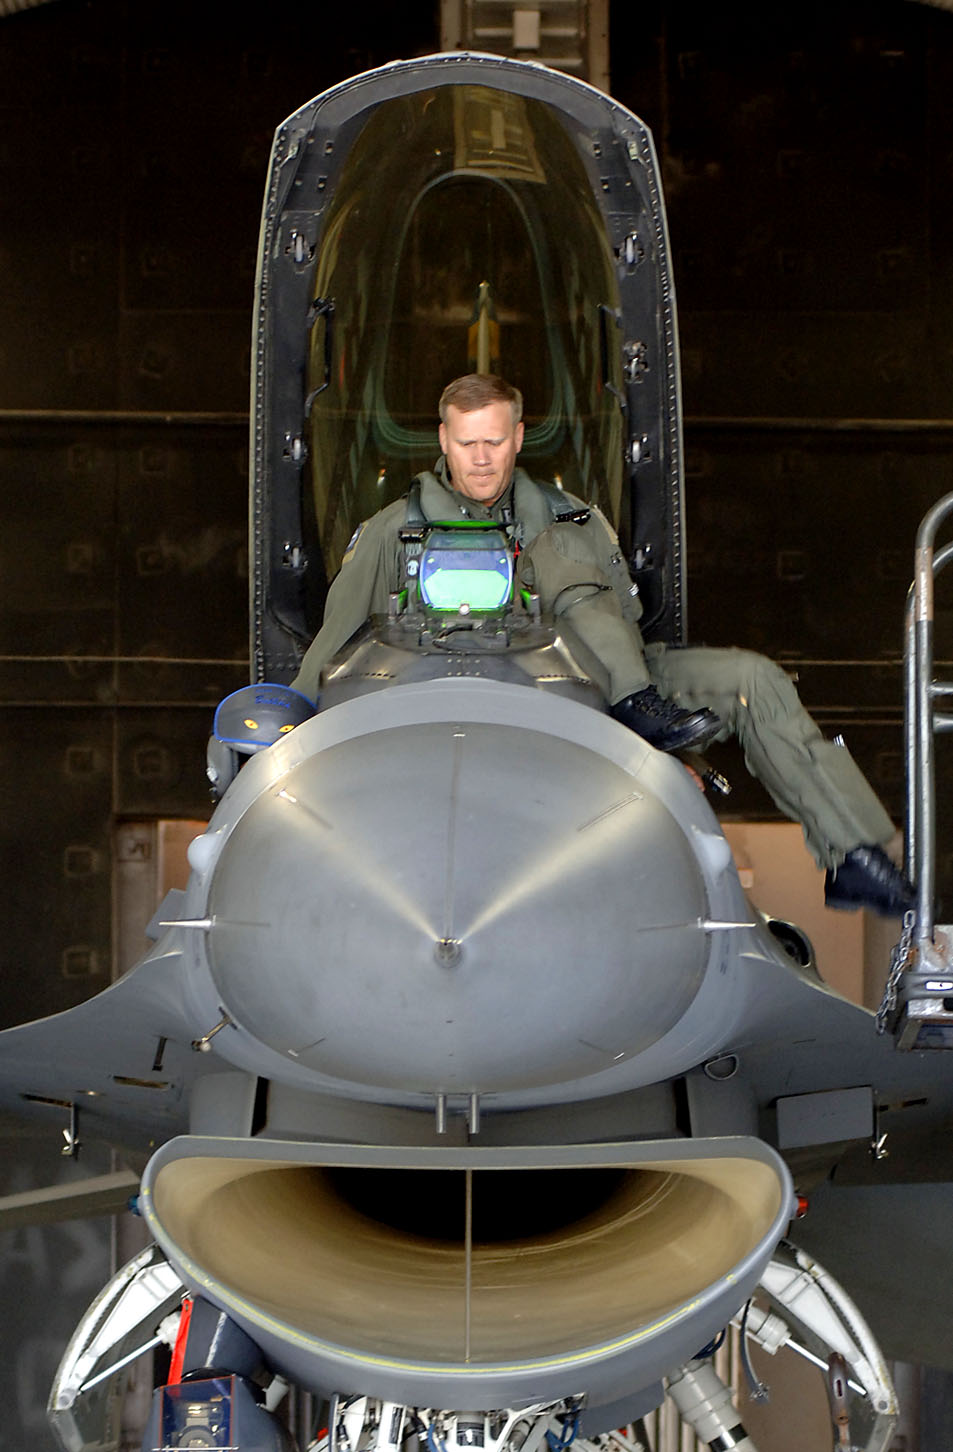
Kunsan Air Base maintains readiness

Colonel Jeffrey Lofgren, 8th Fighter Wing commander, steps off a platform and eases in the cockpit of an F-16 Fighting Falcon at Kunsan Air Base, South Korea.